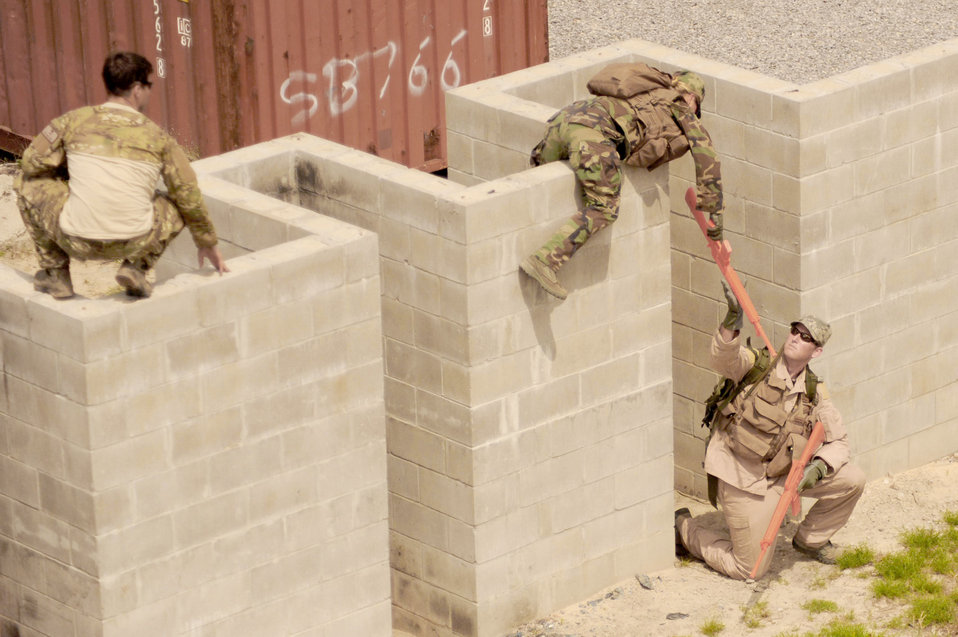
Survival Training vs. OPFOR

An Airman participating in survival, evasion, resistance, and escape training, hands her training M-16 rifle to another Airman as she climbs over a wall as a SERE specialist looks on during combat skills training May 13, 2010 at the Eglin Air Force Base, Fla., range.